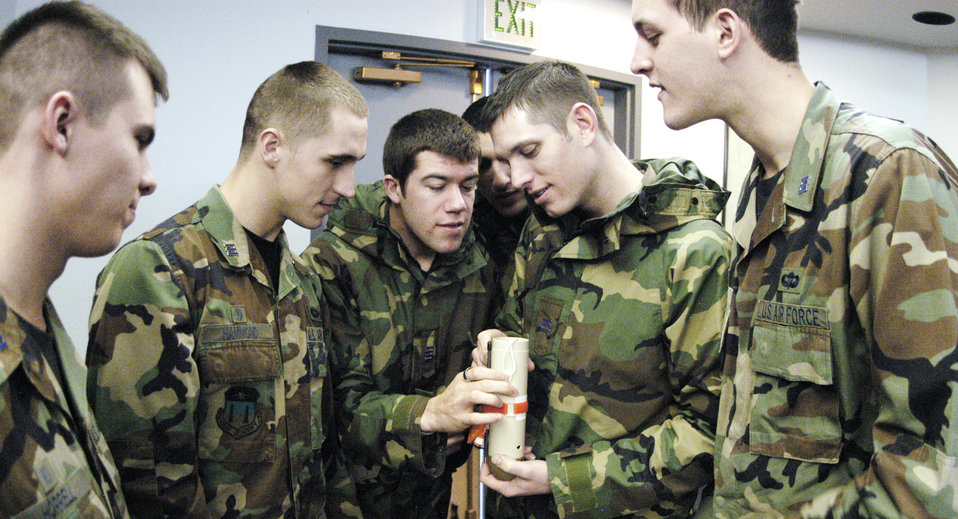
Academy cadets seek to improve combat airdrops

U.S. Air Force Academy Cadets 1st Class Mark Hammond, Jeff Reddout, Lucas Catalino and Philip Husk examine a dropsonde at the 731st Airlift Squadron Feb. 9, 2010, at Peterson Air Force Base, Colo. The cadets are part of the Spring 2010 Aeronautical Engineering 482 class on aircraft design. A core element of their course is the feasibility of deploying a dropsonde via a remotely piloted aircraft to increase airdrop accuracy.